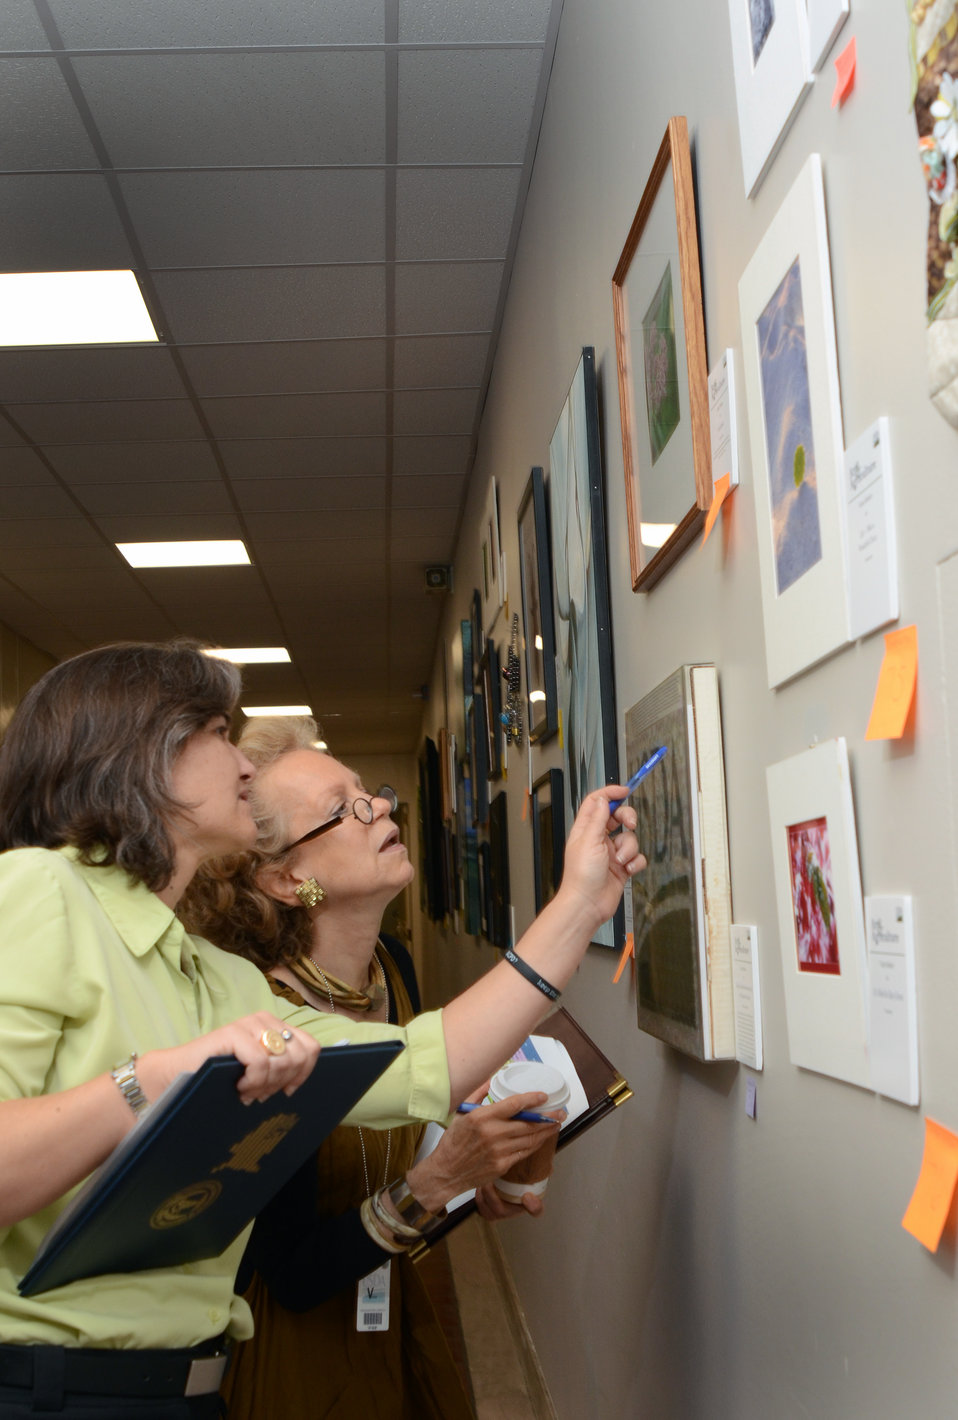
Office of Art and Archives Chief from the House of Representatives Farar Elliott (front) and Independent Museums and Institutions Professional Marjorie Share (rear) judge the U.S. Department of Agriculture (USDA) Art in Agriculture competition held in the USDA South Building, Washington, D.C. on Thursday, May 10, 2012.